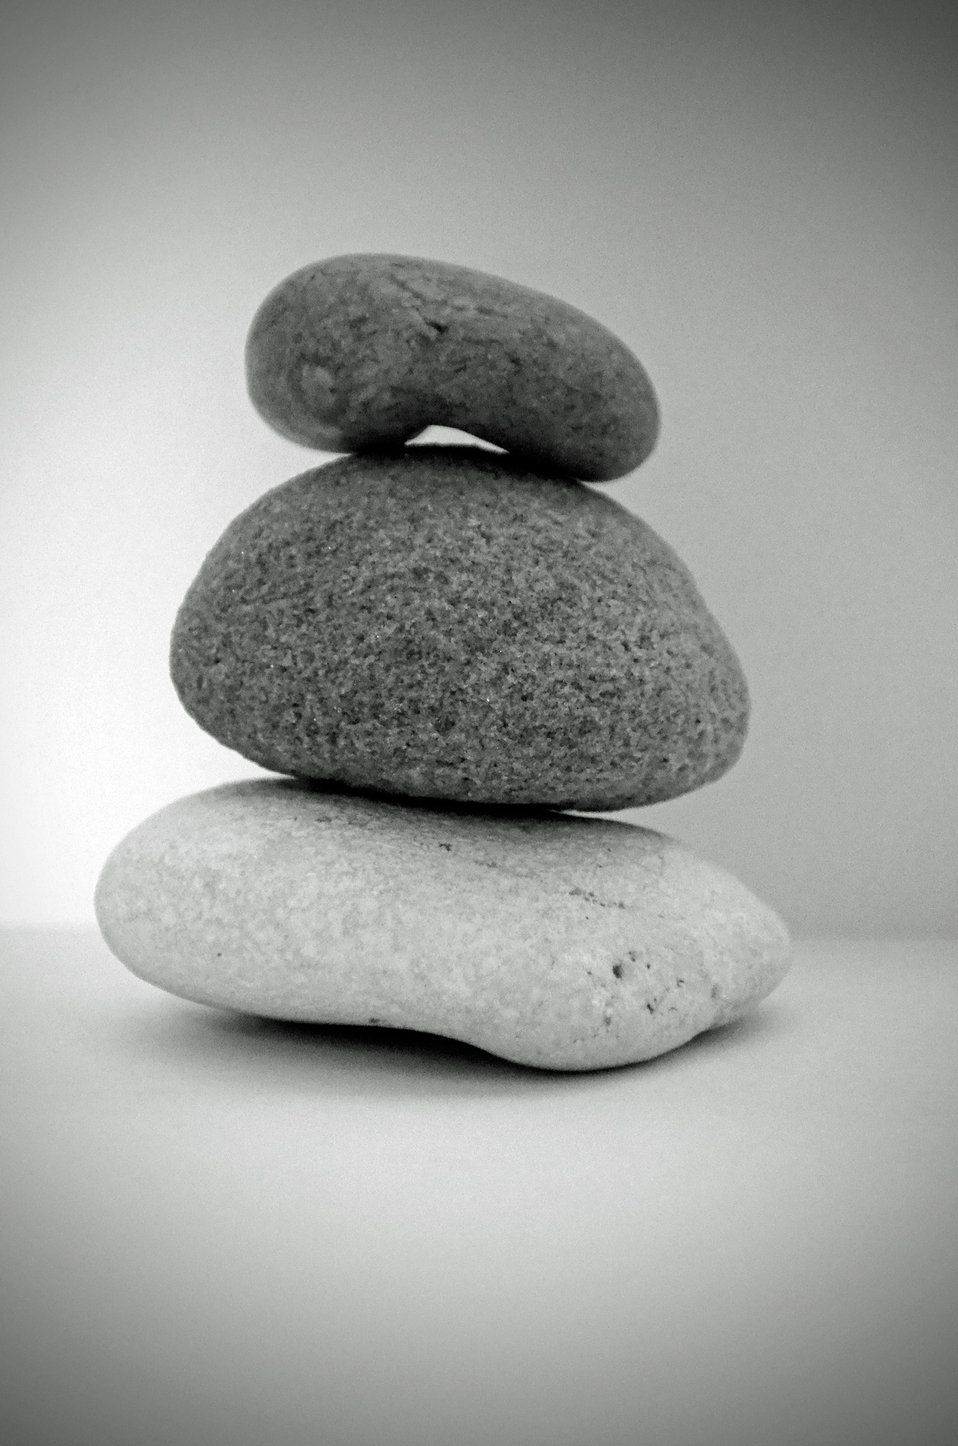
Stone black and white.